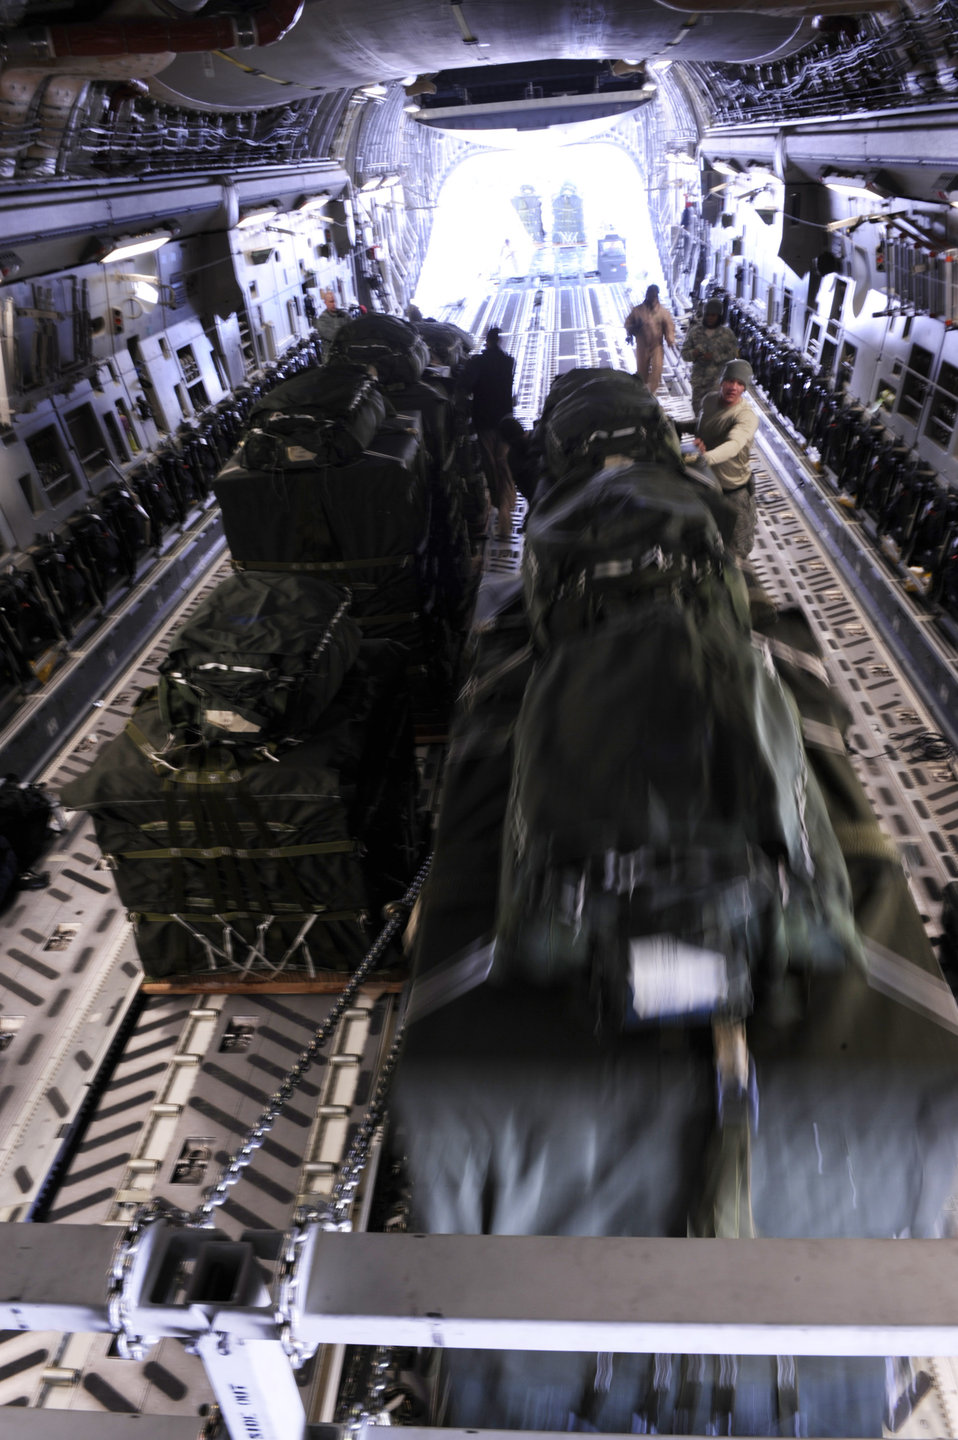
Airmen deliver 1 million pounds of supplies in 42 days

A C-17 Globemaster III aircrew from the 816th Expeditionary Airlift Squadron loads container delivery system bundles onto the aircraft prior to an airdrop mission Feb. 14 in Afghanistan.